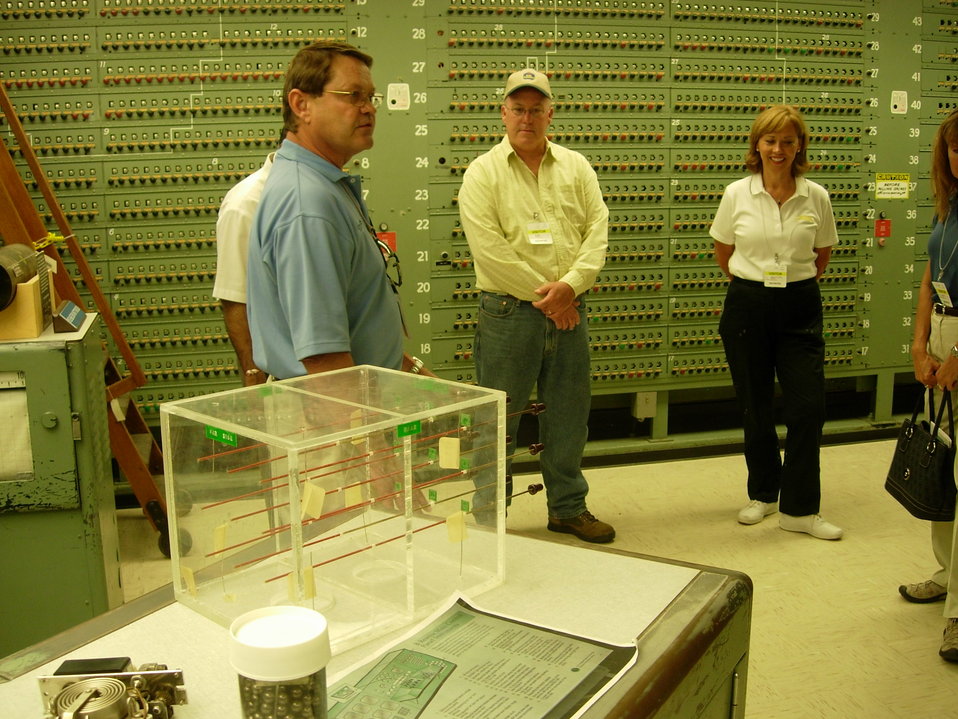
Tri-Cities Visitor and Convention Bureau tour of the Hanford Site

Inside the Control Room at the B Reactor National Historic Landmark, Russ Fabre explains to visitors how the world’s first, full-scale nuclear reactor operated to produce plutonium for the Trinity Test, and for the Fat Man Bomb which was detonated over Nagasaki, Japan in August of 1945.